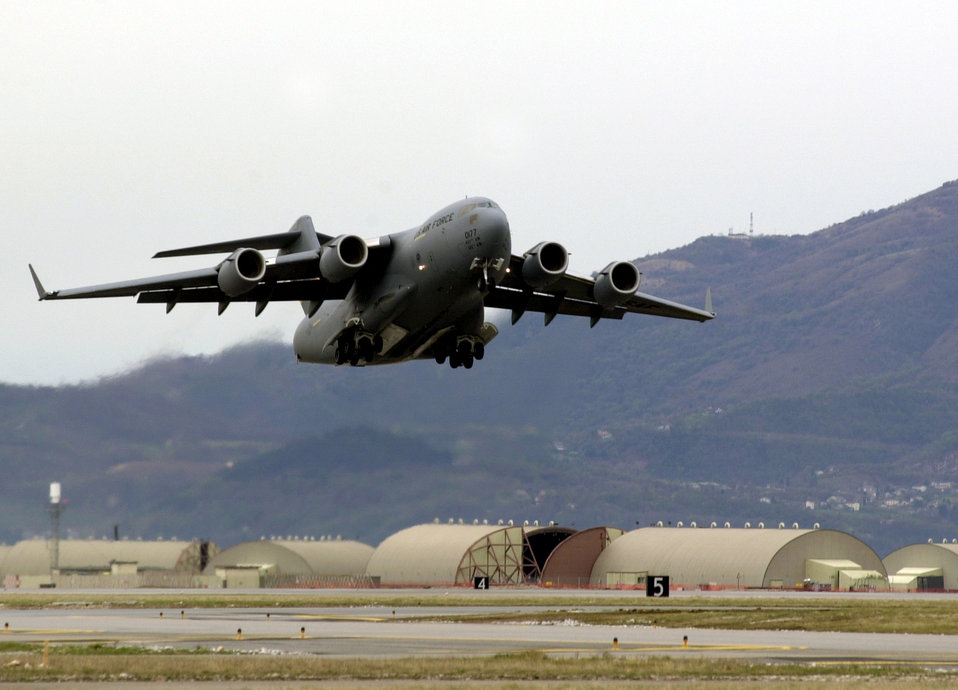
Bound for Washington

AVIANO AIR BASE, Italy -- A C-17 Globemaster III takes off from here bound for McChord Air Force Base, Wash., after transiting through Italy.